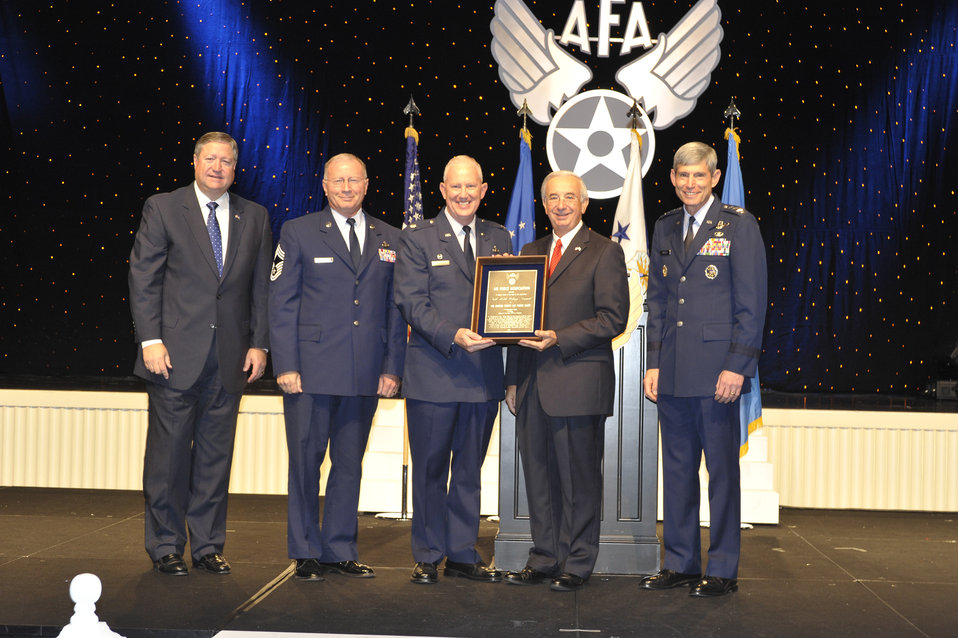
USAF Band wins Gil Robb Wilson Award

Lt. Col. Alan Sierichs (third from left), the United States Air Force Band commander, accepts the Gill Robb Wilson Award from Air Force Association Chairman of the Board Joseph Sutter Sept. 14, 2009, during the Air Force Association Air and Space Conference and Technology Exposition in Washington, D.C. The award is presented annually to an Air Force unit for outstanding contributions to national defense in the field of arts and letters. Also pictured (left to right) are: Secretary of the Air Force Michael Donley, Air Force Band Manager Chief Master Sergeant Jerry Thomas Jr. and Air Force Chief of Staff Gen. Norton Schwartz.